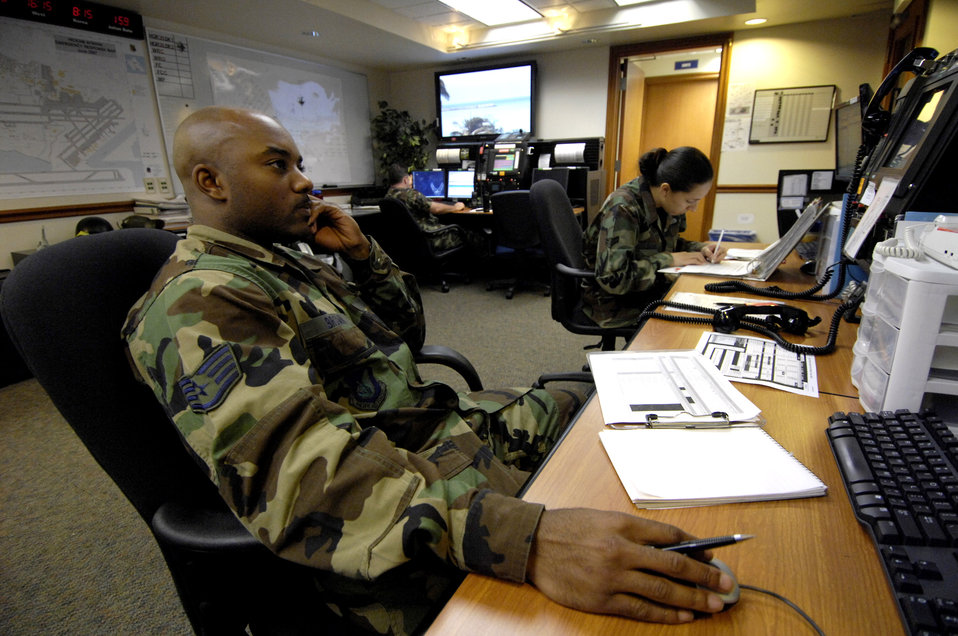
'One command post' initiative beneficial to Airmen

Emergency actions controllers from the 15th Airlift Wing command post work at their consoles June 8 at the command post at Hickam Air Force Base, Hawaii.